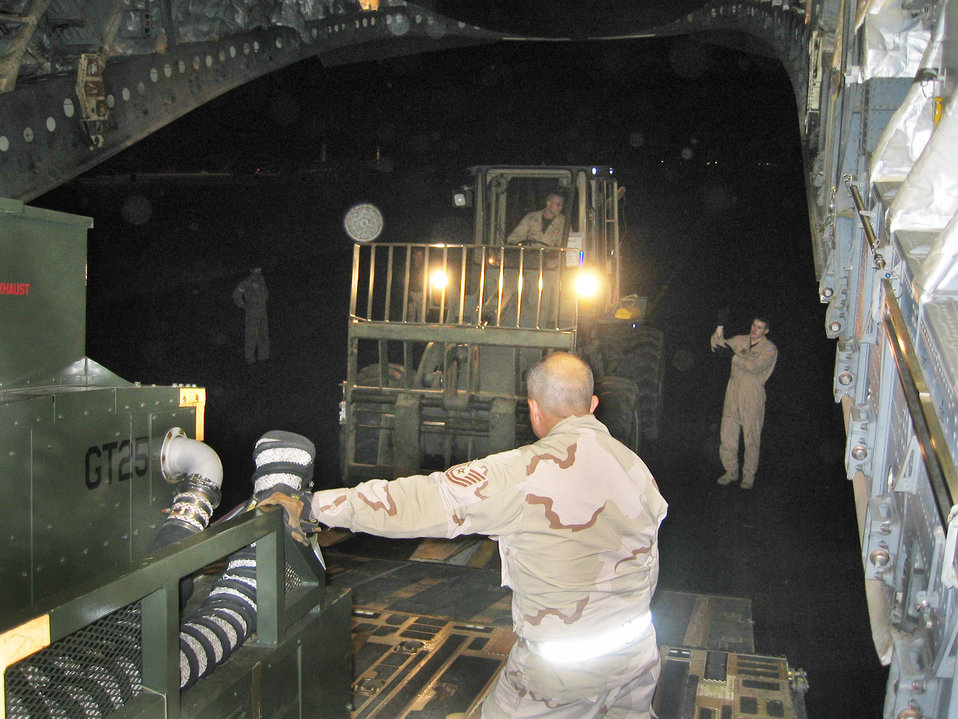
Pakistan Relief Efforts

ISLAMABAD, Pakistan -- Members of the 818th Contingency Response Group-Element, McGuire Air Force Base, N.J., and the 437th Airlift Wing, Charleston Air Force Base, S.C., offload airfield operations equipment. Airmen from the units arrived here Oct. 12.